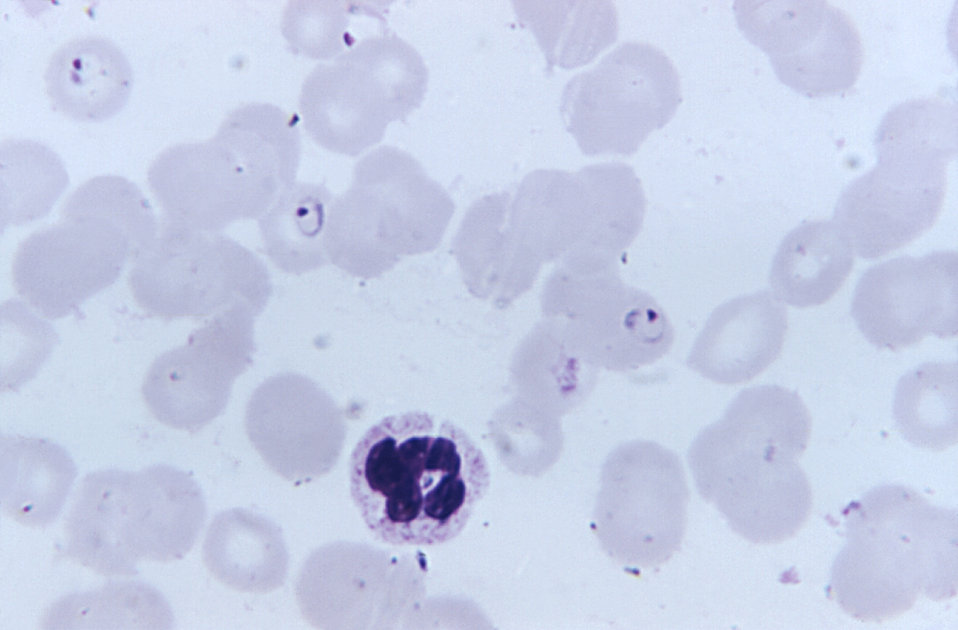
This thin film photomicrograph shows large Plasmodium falciparum rings using a Giemsa stain; Magnification 1125X.